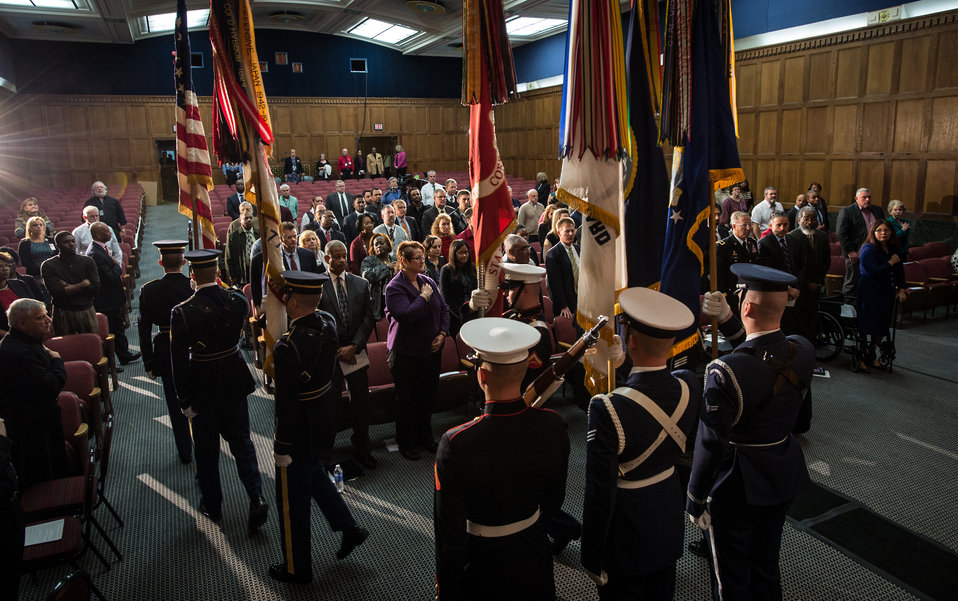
The U.S. Military District of Washington Joint Armed Forces Color Guard present the Colors, during the 2013 U.S. Department of Agriculture (USDA) Veterans’ Day Observance, whose theme is “VALOR, COURAGE, SACRIFICE – HONORING ALL WHO SERVED,” in Washington, DC, on Wednesday, November 20, 2013.